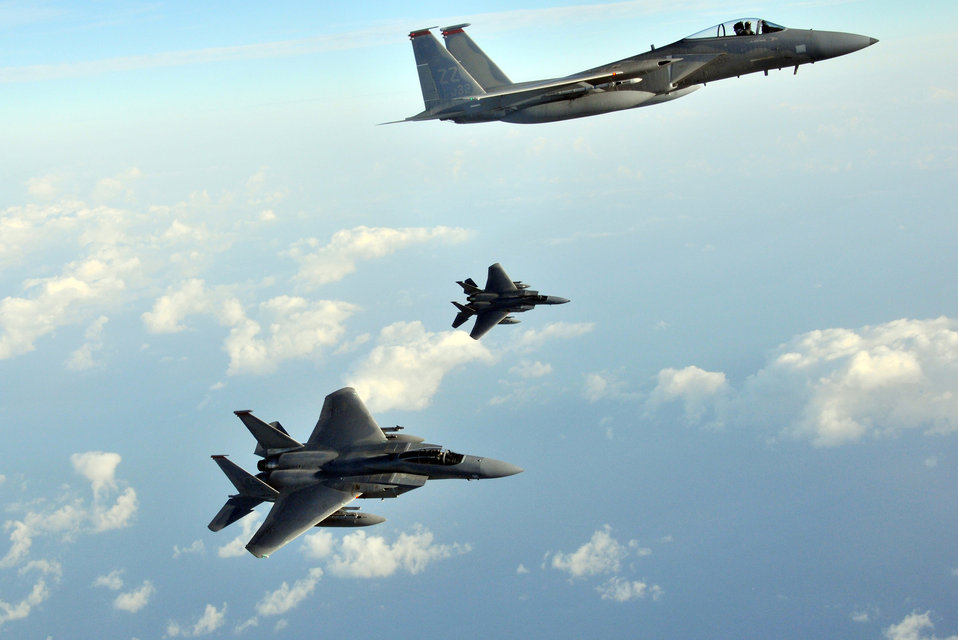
Joint Bilateral Training

F-15C Eagles from the 67th Fighter Squadron at Kadena Air Base, Japan, participate in bilateral training with other U.S. forces and the Japan Air Self Defense Force Feb. 25, 2010.